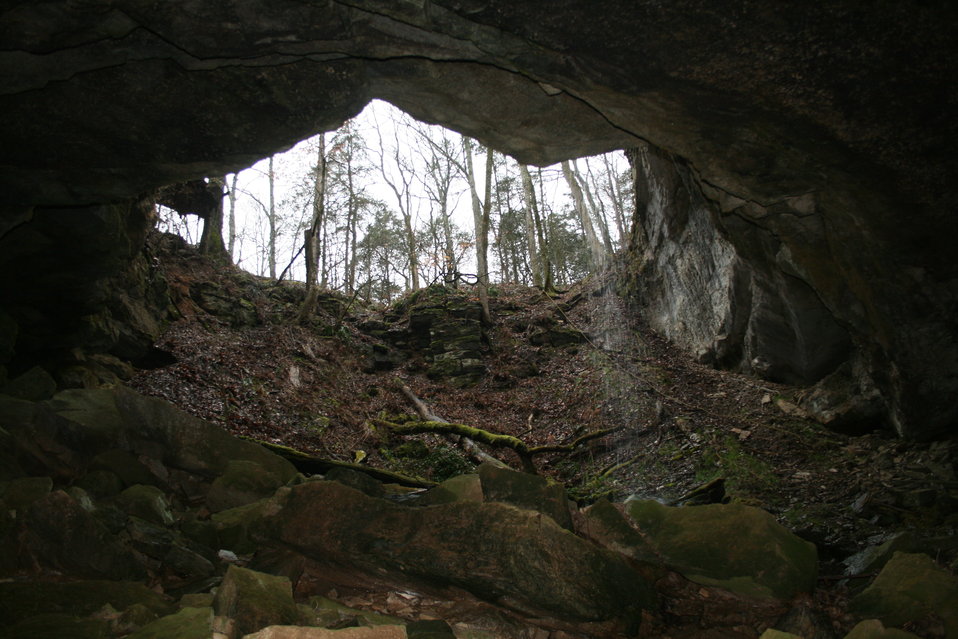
From inside cave entrance